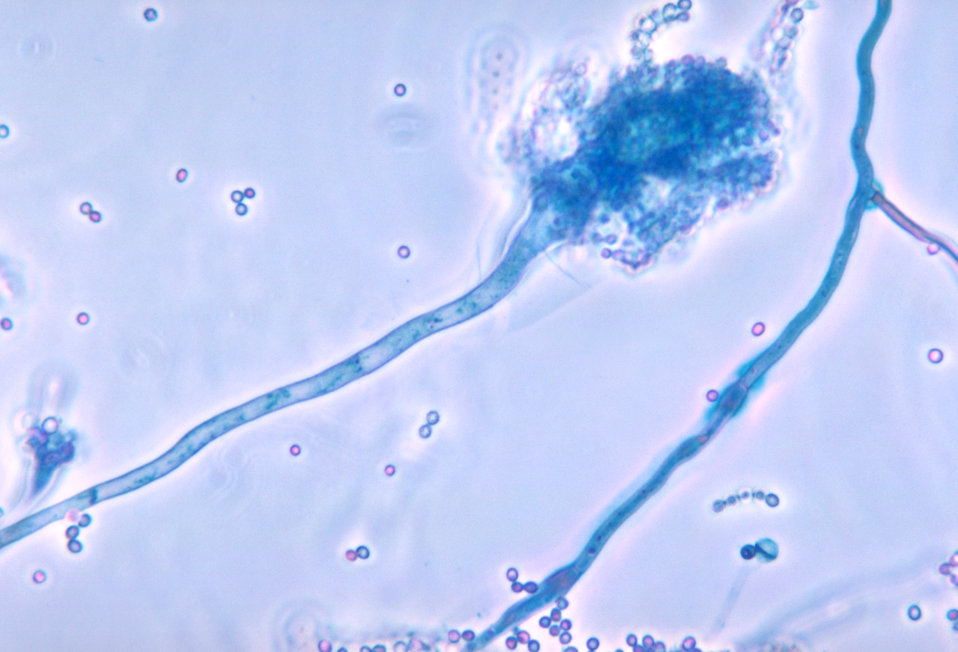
This photomicrograph depicts the appearance of a conidiophore of the fungus Aspergillus fumigatus.